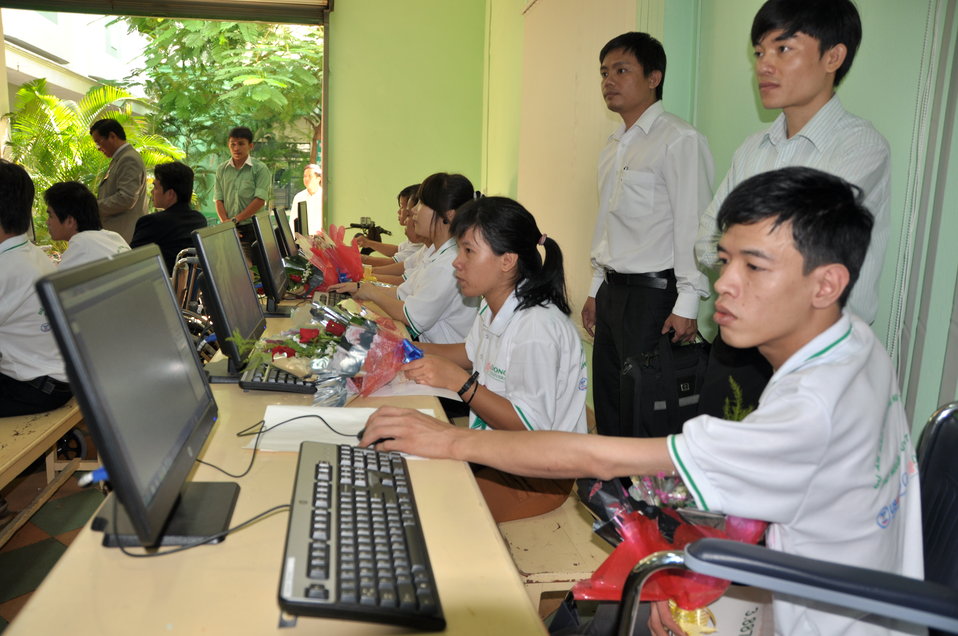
New class of students starts at Dong A Univeristiy with support from USAID and CRS

Photo: @USAIDVietnam
December 3, 2012